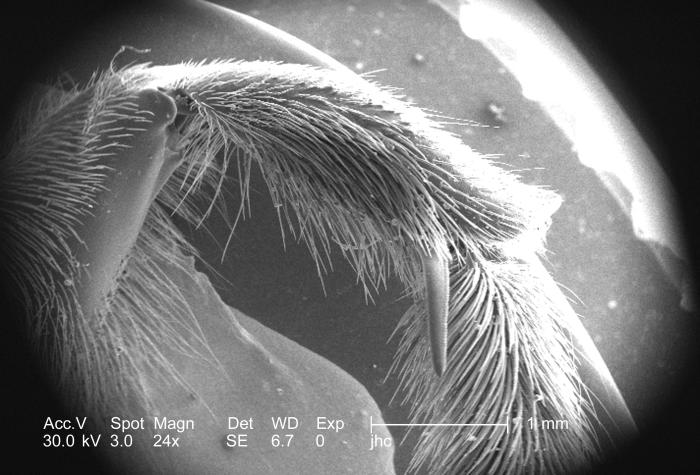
Under a very low magnification of only 24x, this scanning electron micrograph (SEM) revealed the rear leg anatomy of a carpenter bee, Xylocopa virginica, at the region of the "tibial spur". These spurs, which are exoskeletal protuberances, enable the bee to grasp various floral structures, thereby, enhancing its maneuverability inside the flower while it obtained its nectar meal, and pollinated the plant.